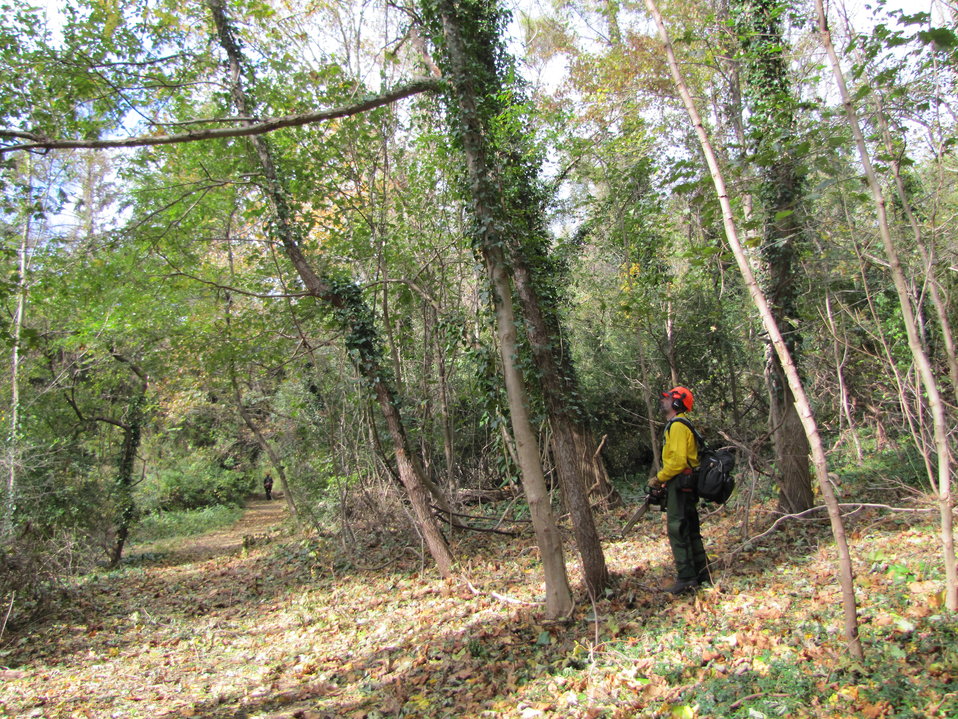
Preparing to remove a hazard at Target Rock National Wildlife Refuge (NY)

Assessing the best way to fall this potential hazard at Target Rock National Wildlife Refuge, part of the Long Island National Wildlife Refuge Complex.